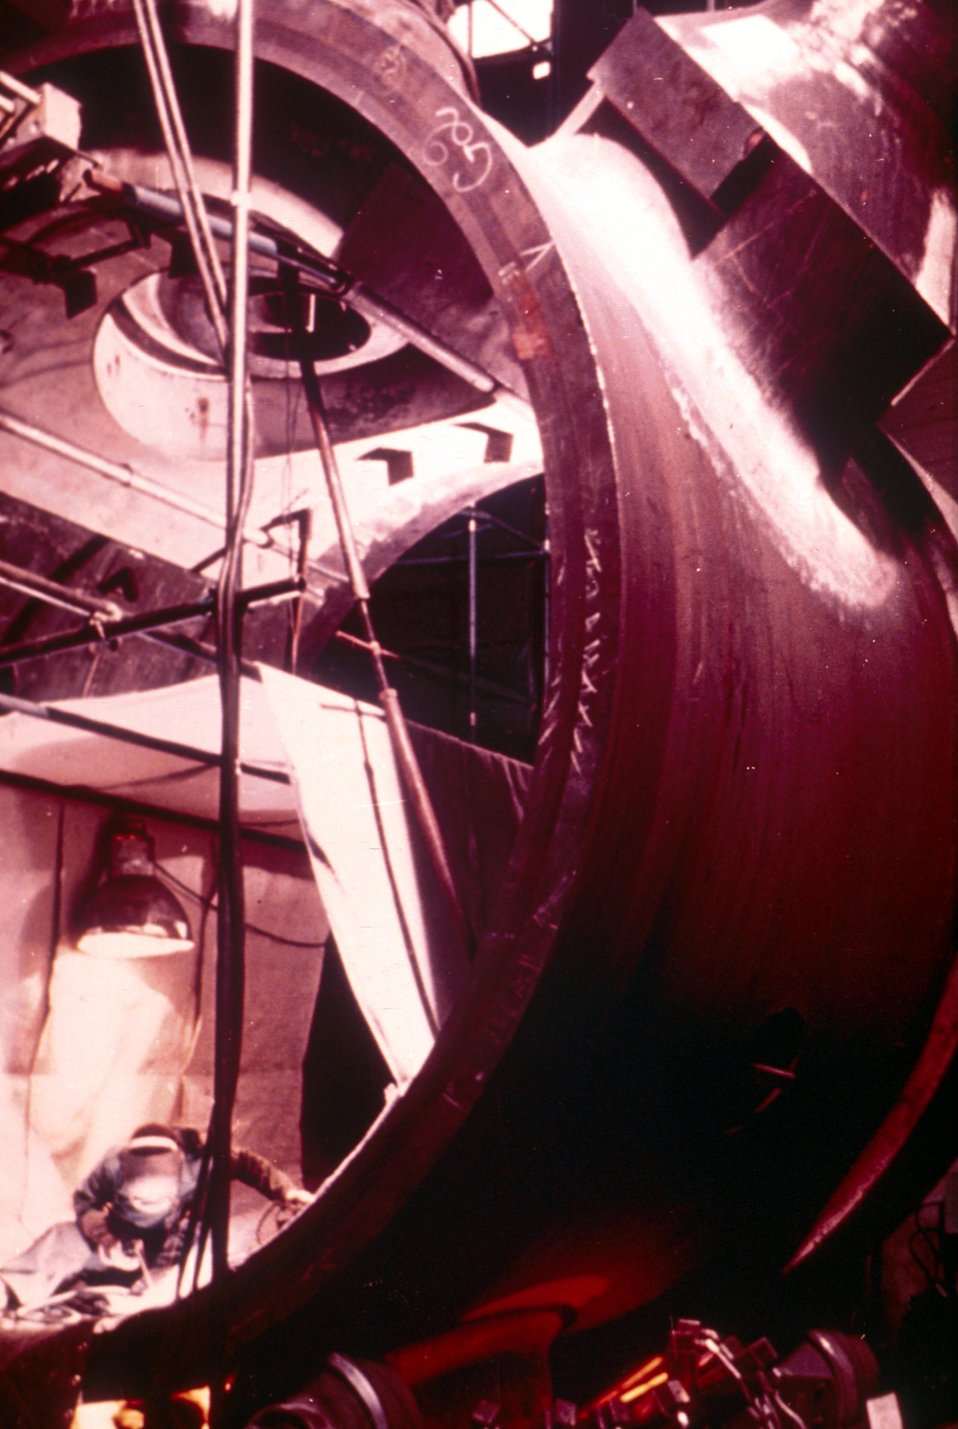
Soudage et contr«le dans une centrale P.W.R.